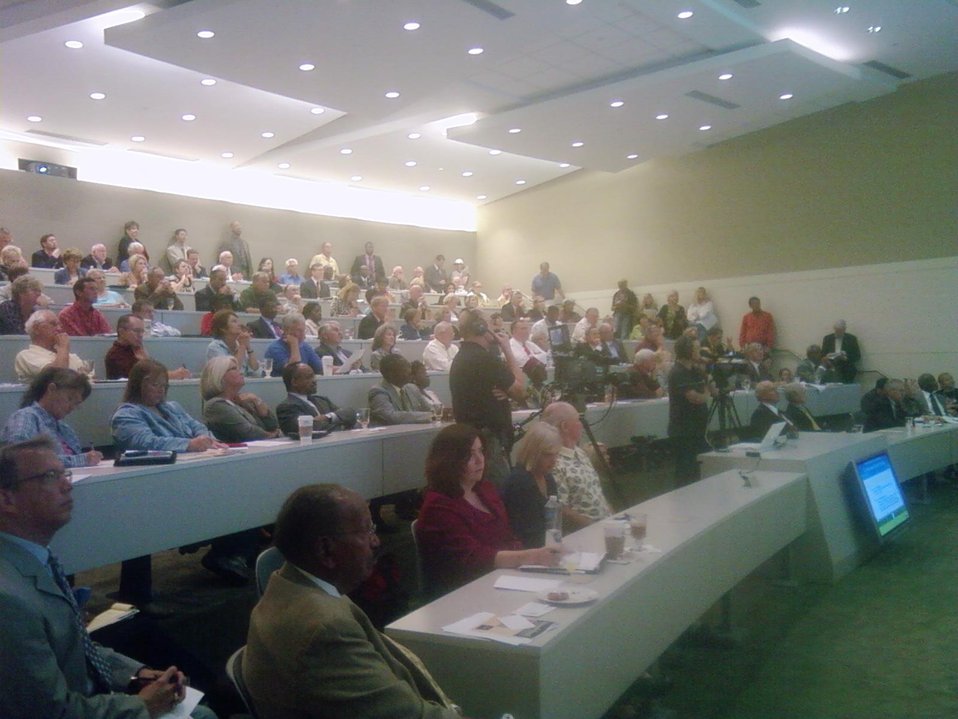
Field Hearing on Broadband Adoption 10-6-09